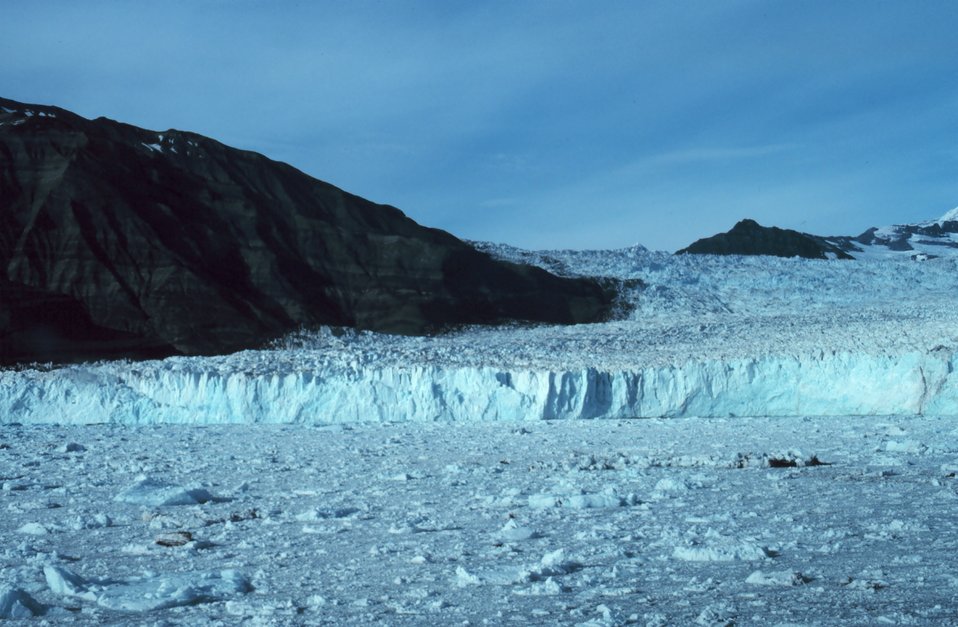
Guyot Glacier